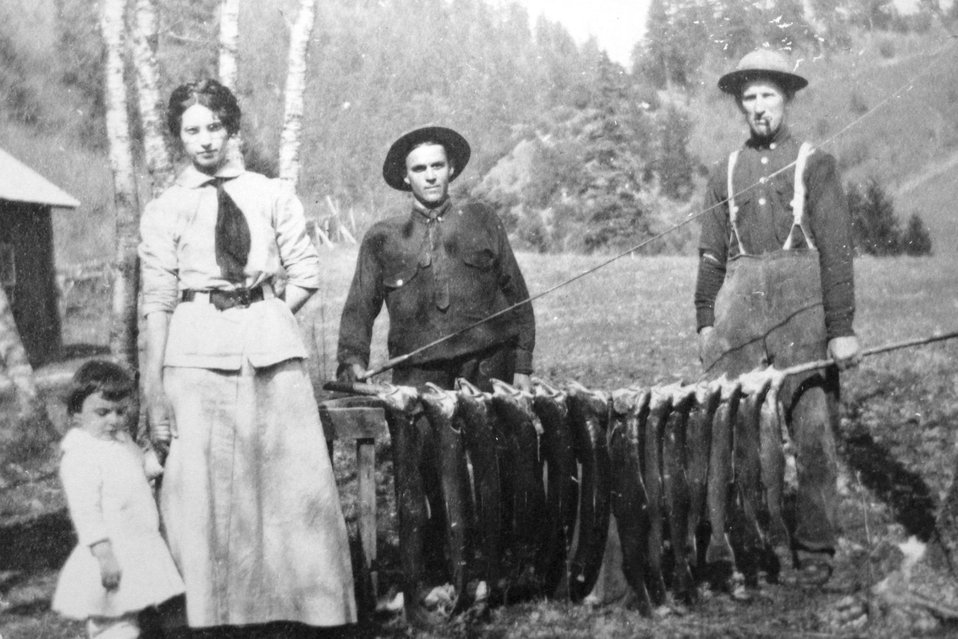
Maxine and Mrs. Corwin, Ivin Billings and Bill Corwin showing their catch at the Red River Mining and Milling Co. C. 1918